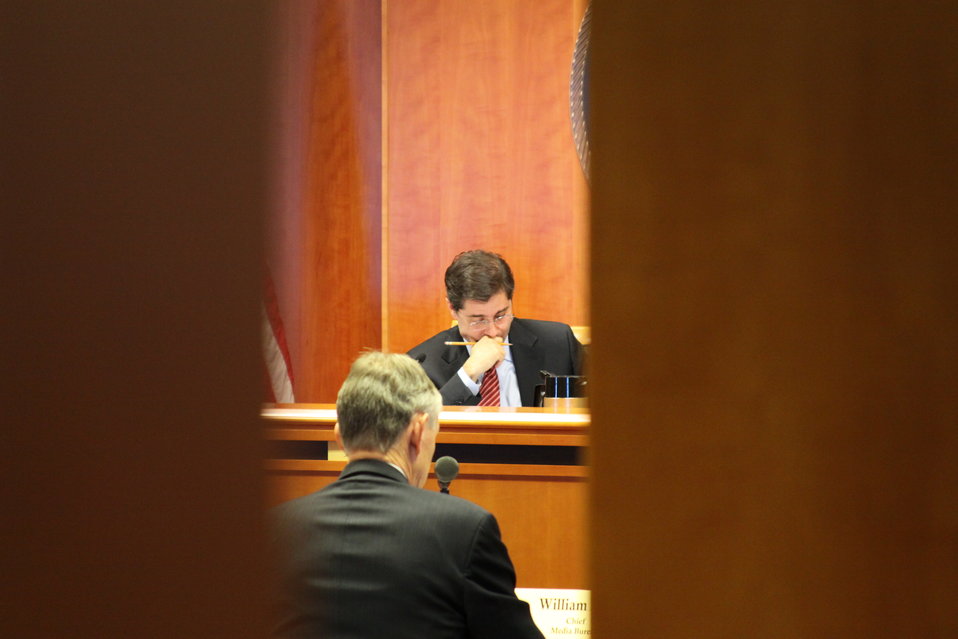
December Commission Meeting